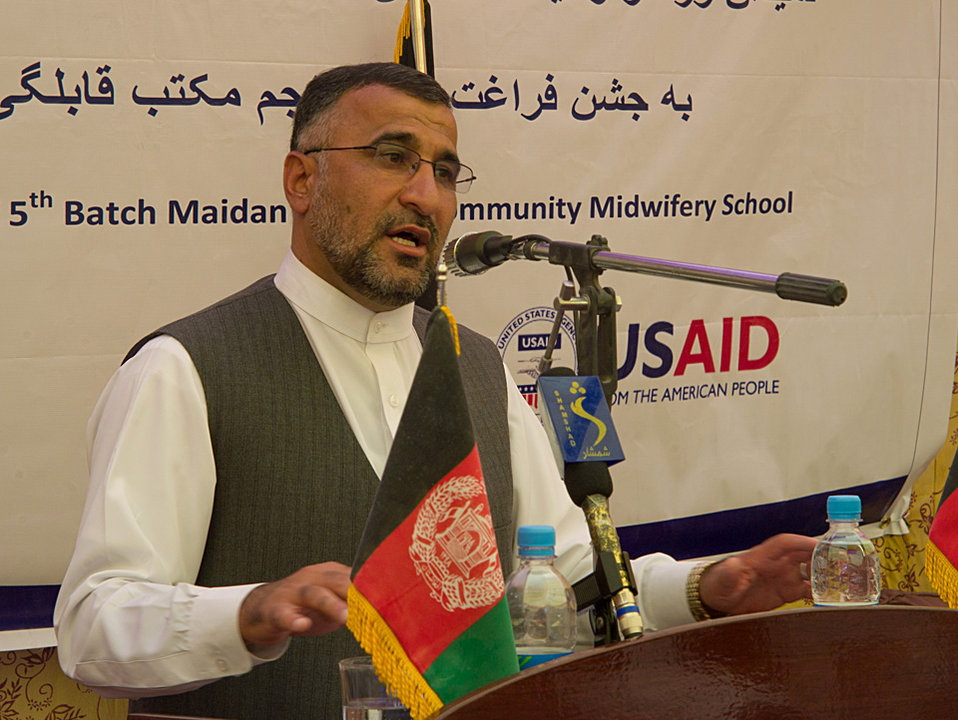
Governor of Wardak 1